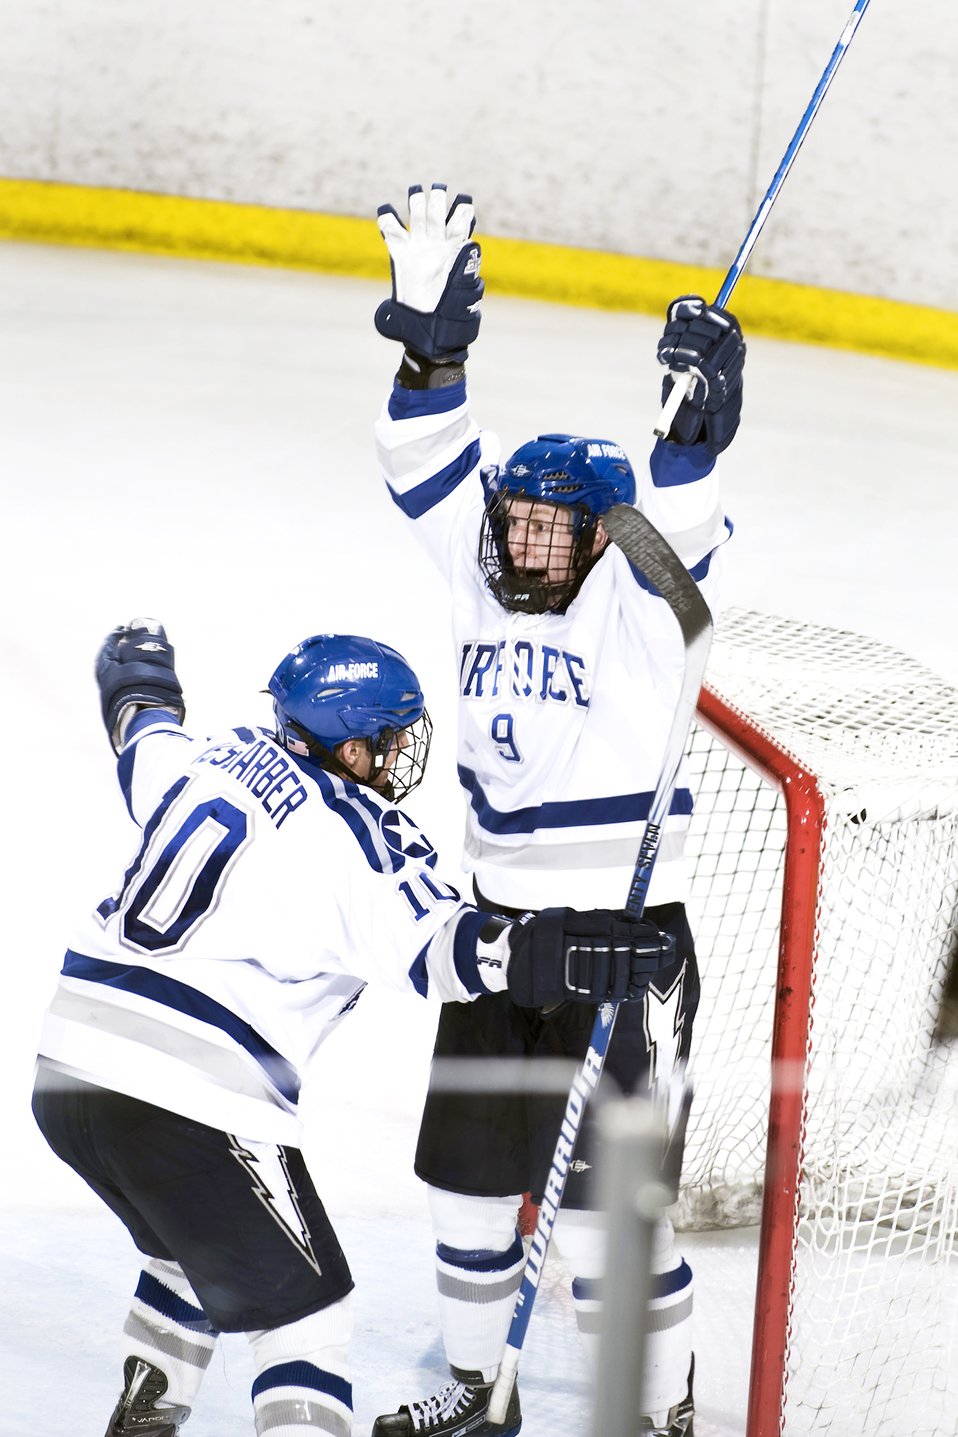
Air Force beats Army Black Knights

Academy senior defenseman Brandon Johnson celebrates after scoring the second goal of his career with 2:38 remaining in the 2nd period as Air Force defeated Army 4-2 at the U.S. Air Force Academy's Cadet Ice Arena March 13, 2010. Air Force went on to win the best-of-three series 2-0, advancing to the Atlantic Hockey Association Final Four against Sacred Heart March 19 in Rochester, N.Y.